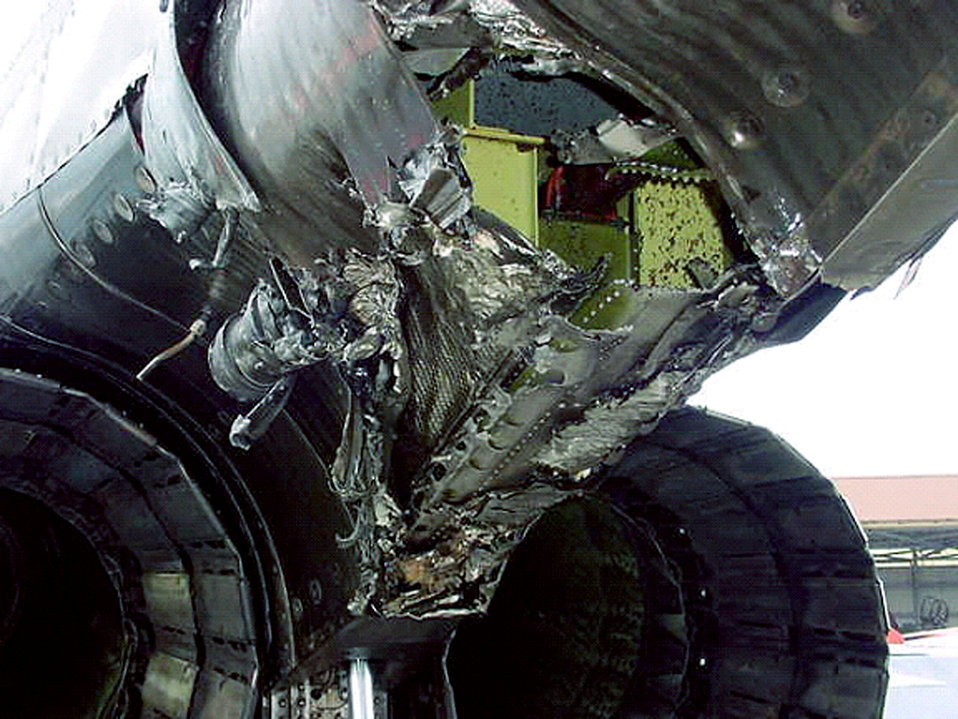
TYNDALL AIR FORCE BASE, Fla. -- The titanium blast shields on this QF-4 Phantom II were extensively damaged. Aircraft structural engineers repaired the full-scale aerial target drone saving the military $620,000.